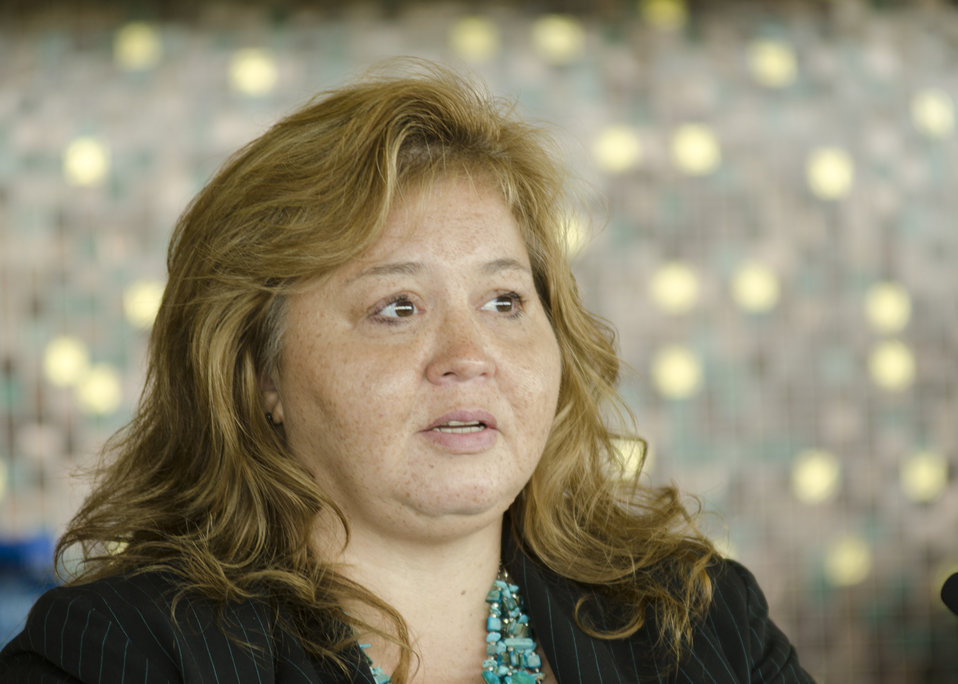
Natural Resources and Conservation official Native Village of Tyonek in Tyonek, AK., Angela Sandstol speaks at the closing session of the first business meeting of the U.S. Department of Agriculture’s (USDA) Council for Native American Farming and Ranching (CNAFR) held at the National Museum of the American Indian in Washington, D.C., on Wednesday, Aug. 15, 2012. CNAFR was created to advise the Secretary on ways to eliminate barriers to participation for Native American Farmers and Ranchers in USDA programs. The Council was established as part of the Keepseagle settlement, and is conducted under the oversight of USDA's Office of Tribal Relations under the Office of the Secretary of Agriculture.